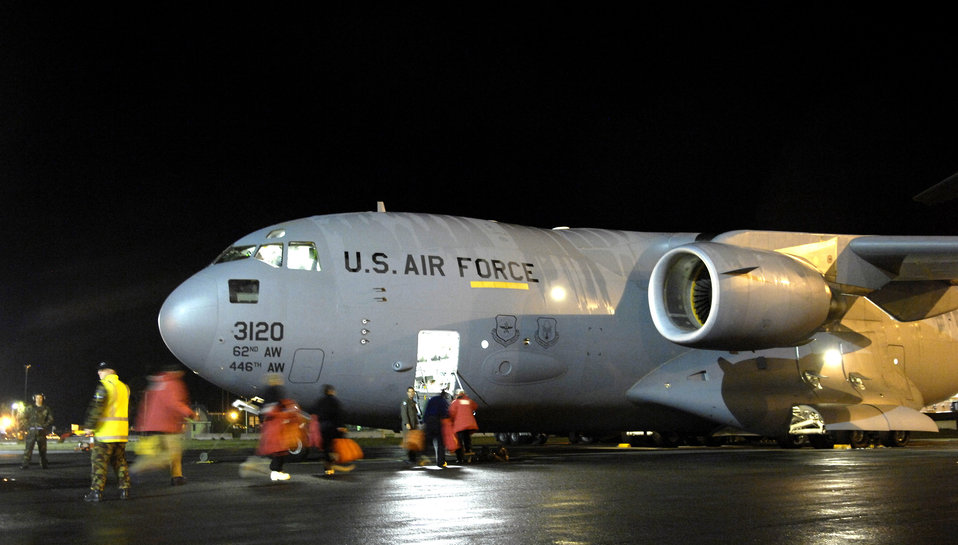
Operation Deep Freeze 2007-08 begins

Members of the National Science Foundation load supplies on a C-17 Globemaster III for a winter fly-in mission during Operation Deep Freeze Aug. 20 at Christchurch, New Zealand. A C-17 and 31 Airmen from McChord Air Force Base, Wash., began the annual winter flight in augmentation of scientist, support personnel, food and equipment for the U.S. Antarctic Program at McMurdo Station. WinFly is the opening of the first flights to McMurdo Station, which closed for the austral winter in February.